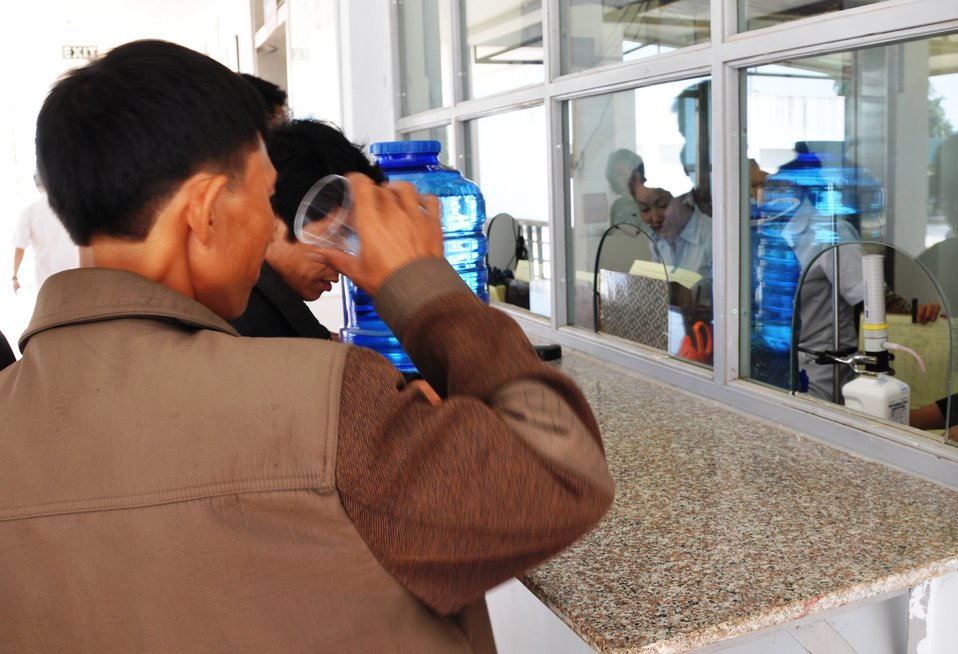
Patients receive methadone treatment in Dien Bien